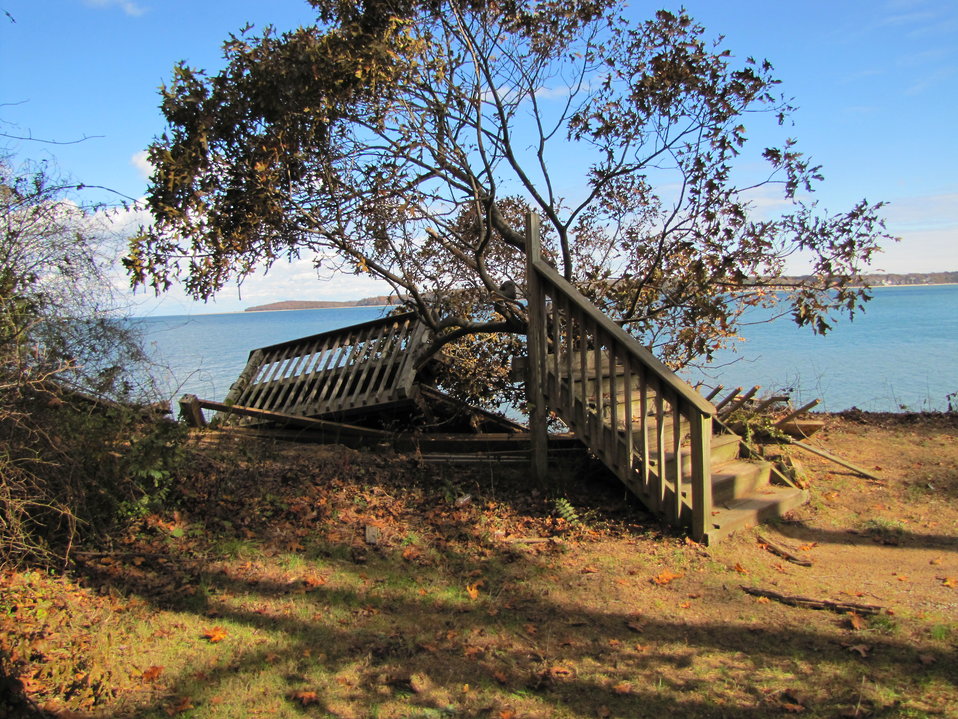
Damage to outlook at Target Rock National Wildlife Refuge (NY)

Target Rock overlook at Target Rock National Wildlife Refuge, part of the Long Island National Wildlife Refuge Complex.